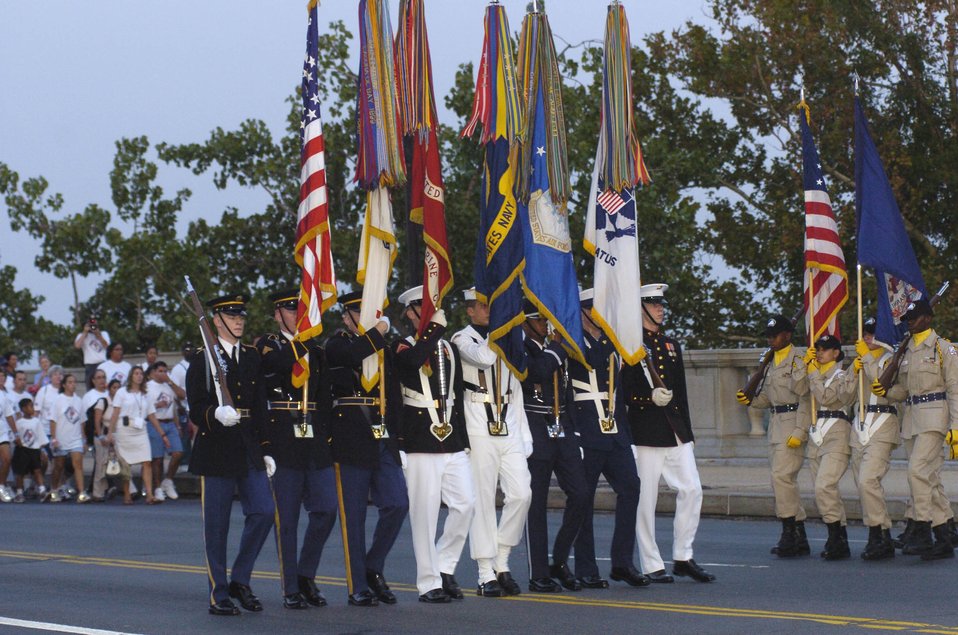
Thousands participate in 'America Supports You' Freedom Walk

Members of the National Guard Youth Challenge Program (right) prepare to change places with the joint service honor guard on Memorial Bridge during the America Supports You Freedom Walk in Washington, D.C., Sept. 10.